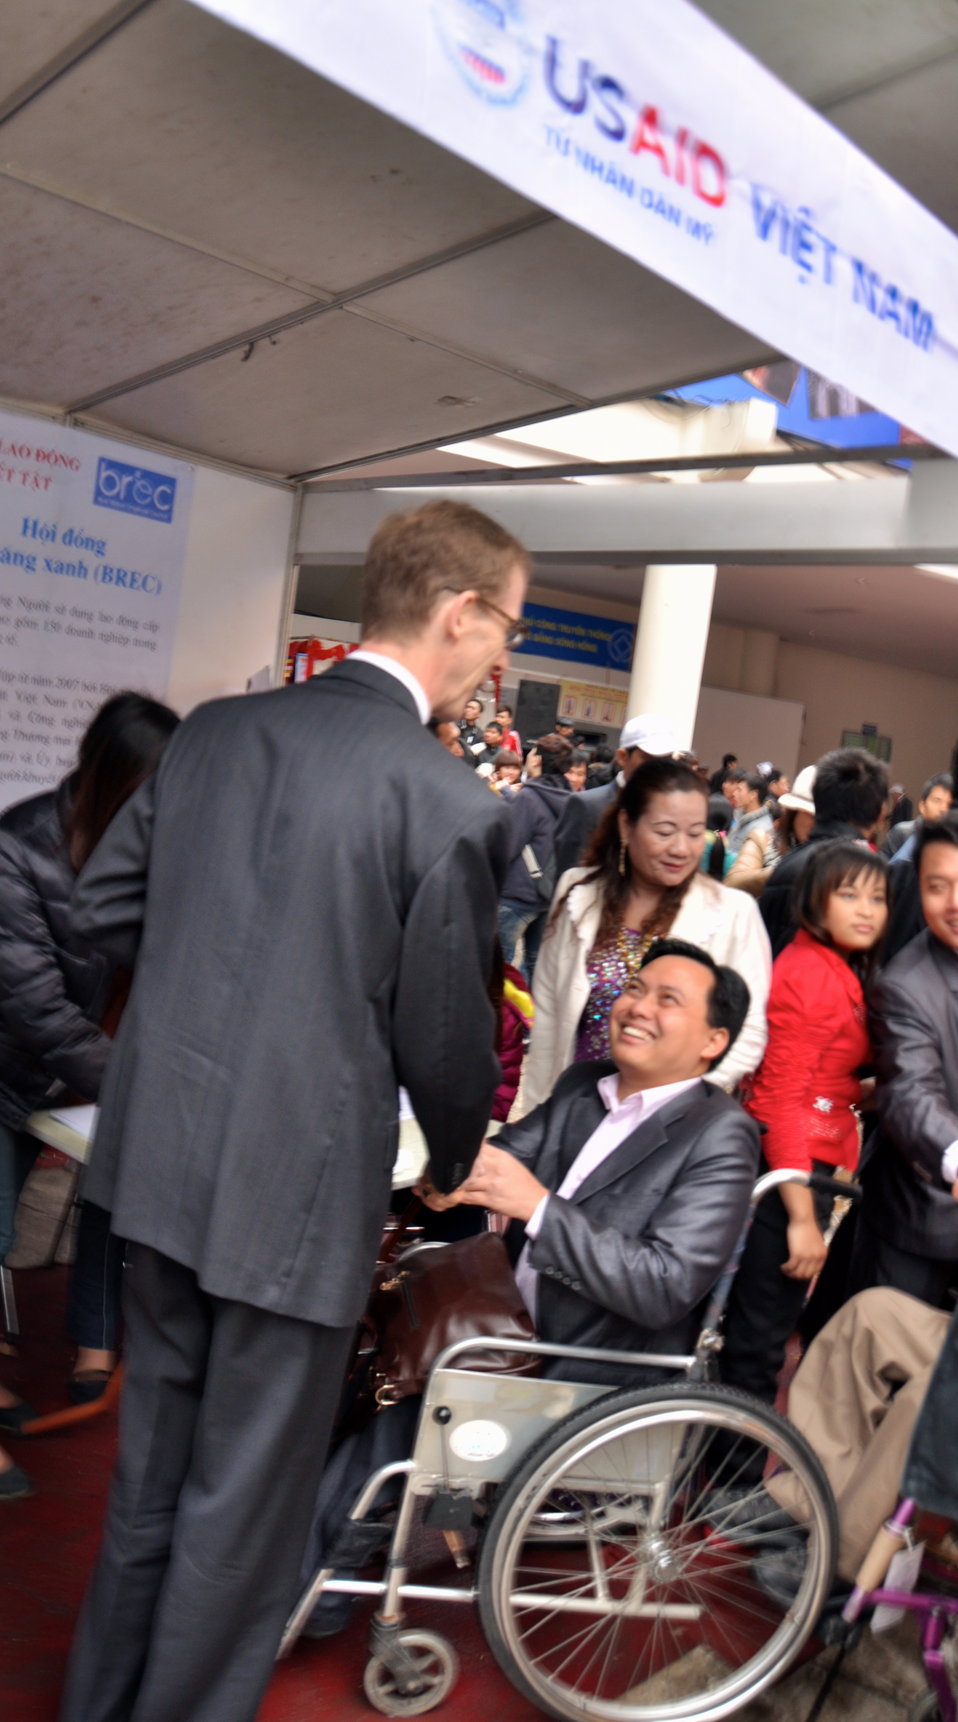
USAID Mission Director Joakim Parker joins celebration of International Day of Persons with Disabilities in Hanoi, Vietnam

December 2, 2012